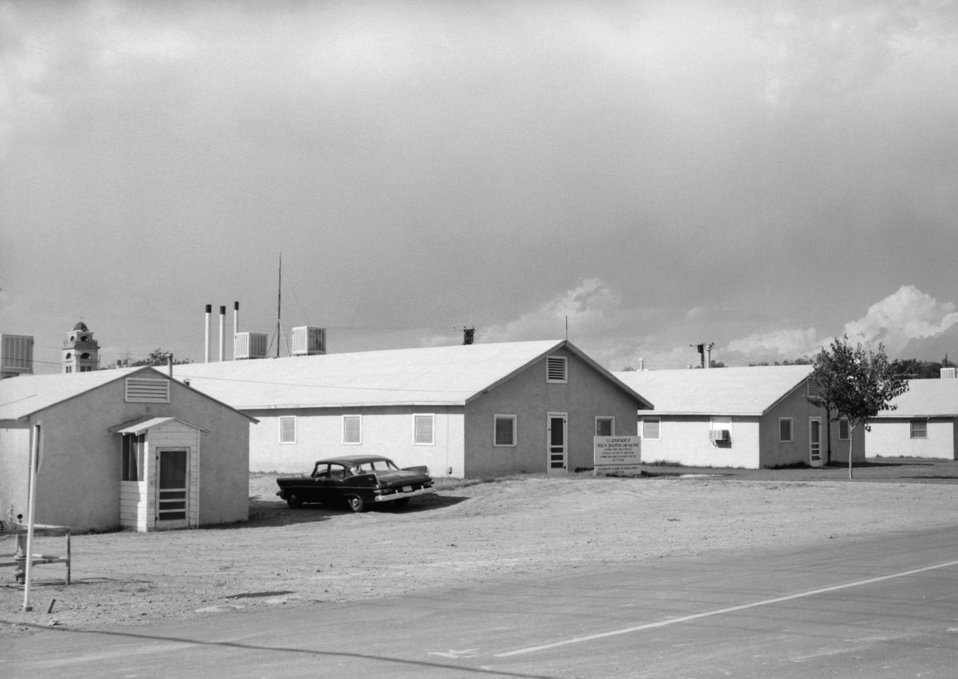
An exterior photograph from the 1960s of the South West Rabies Investigations facilities, Las Crucis, New Mexico.